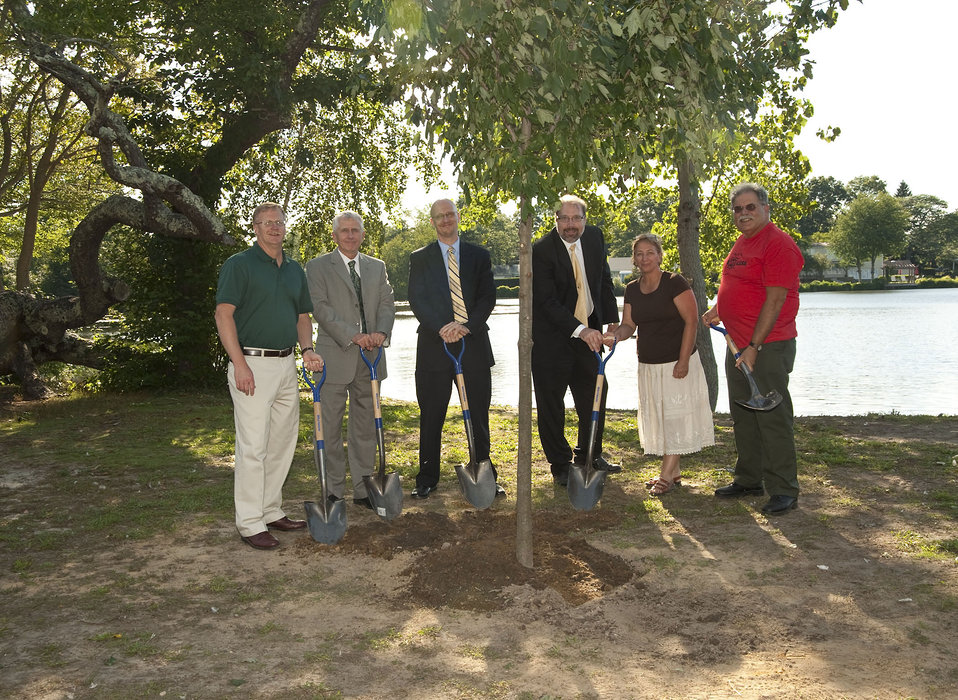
On Tuesday August 23, 2011, USDA Animal Plant Health Inspection Service along with state and local partners in New York State declared Islip New York free of the Asian Longhorned Beetle (ALB). The ALB is an invasive plant pest that is damaging to many species of hardwood trees; including Maple; Elm; Ash; Birch; Willow and Poplar trees.

(L-R) Greg Dawson, Town of Islip Commissioner of Parks; Vic Harabin, Director, Plant Protection & Quarantine, USDA APHIS; Bill Ketzer, Special Assistant to the Commissioner, NY Department of Agriculture and Markets; Kevin King, Director, Division of Plant Industry NY Department of Agriculture And Markets; Joan Mahoney, NY Agriculture & Markets and Joe Gittleman, APHIS NY ALB Project Manager, plant a tree reforesting Islip, NY.